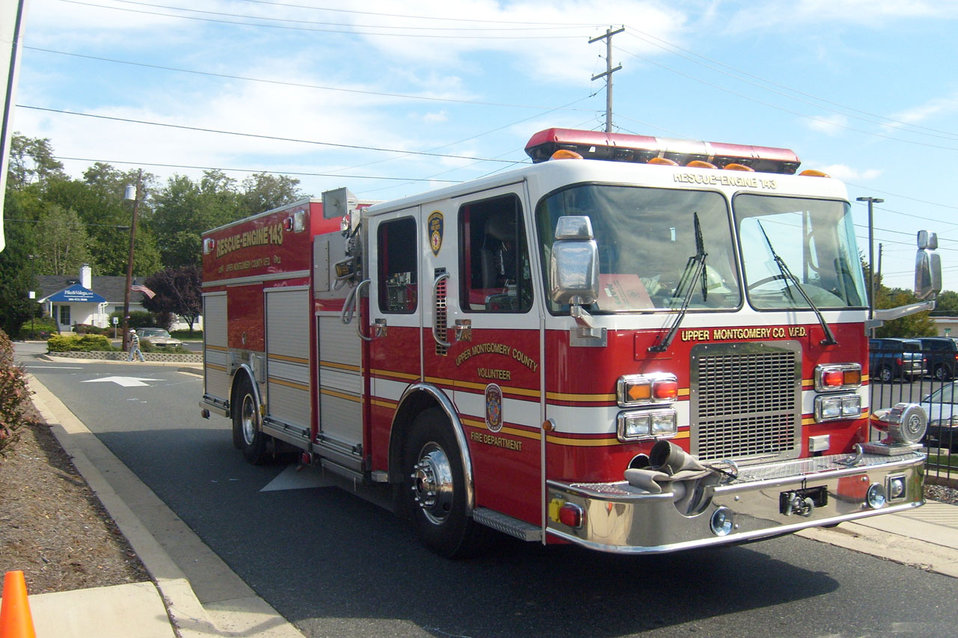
Fire engine 143.